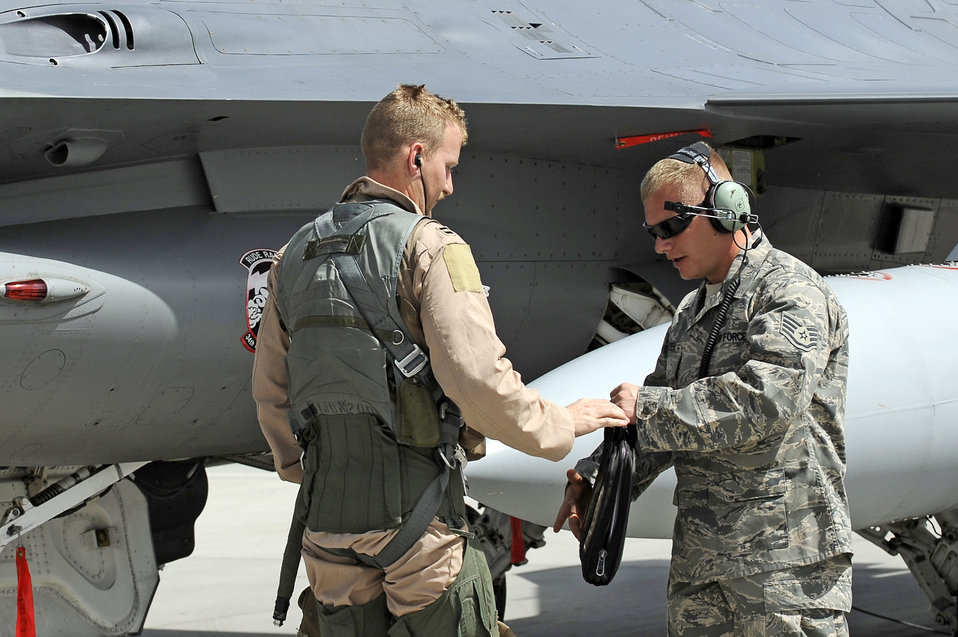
30 Code 1 flights

Staff Sgt. Lucas Inboden, a crew chief from the 34th Expeditionary Fighter Squadron at Bagram Airfield, Afghanistan, talks with the pilot of an F-16 Fighting Falcon March 23, 2010, after the fighter completed its 30th code 1 flight, meaning no maintenance write-ups for 30 flights in a row.